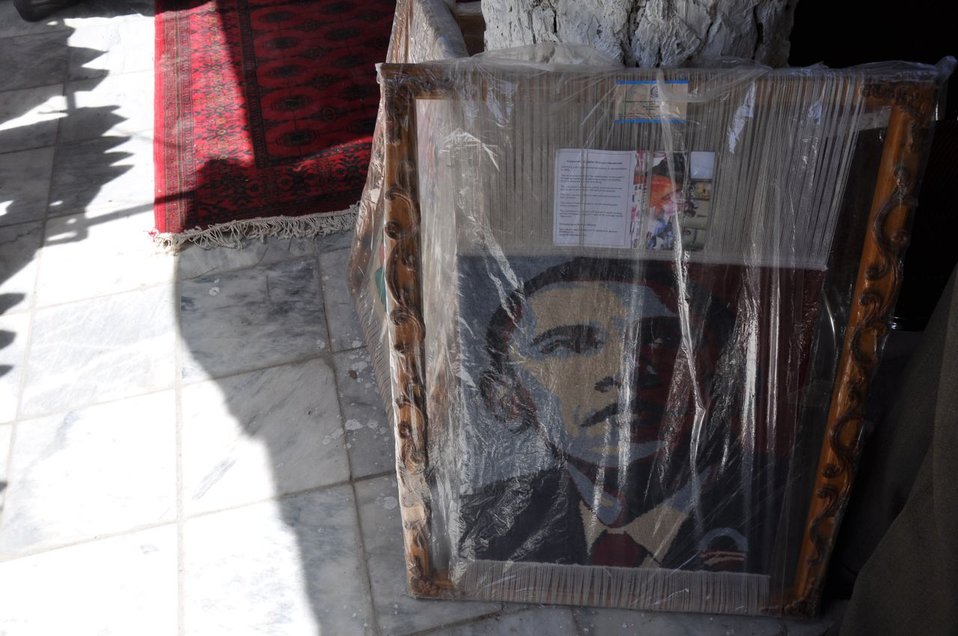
Mother's Day in Afghanistan

Handmade rug of US President Barack Obama's image